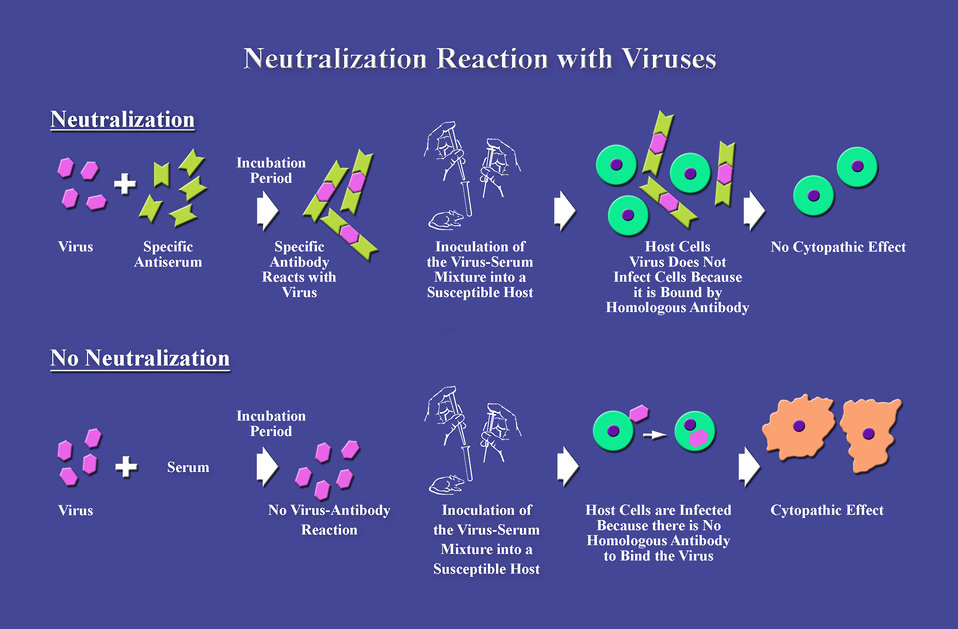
This illustration depicts what takes place during a neutralization reaction test with viruses, which is used to determine the presence of an antigen-antibody complex within a serum sample, and whether or not, when the serum sample is used as an inoculum, there is a subsequent cytopathic affect.